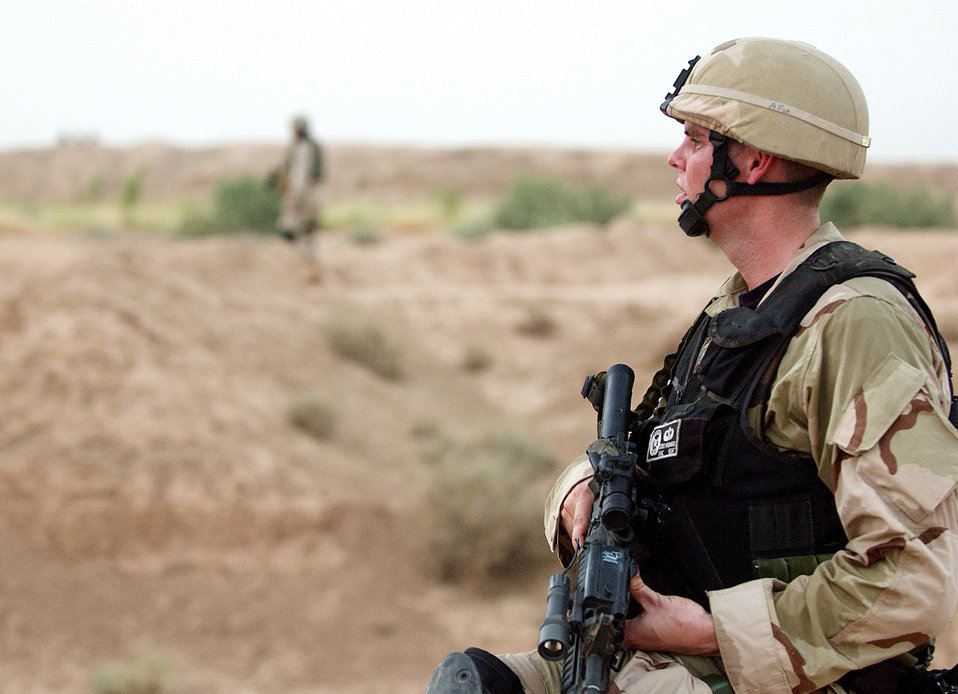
Scouting about

IRAQ -- Tech. Sgt. Scott McDaniel provides security during a weapons interdiction mission here May 31. He is part of an Army and Air Force team which must scout the area before a coalition attack to help ensure no collateral damage will occur. Sergeant McDaniel is assigned to the 116th Expeditionary Air Support Operations Squadron.